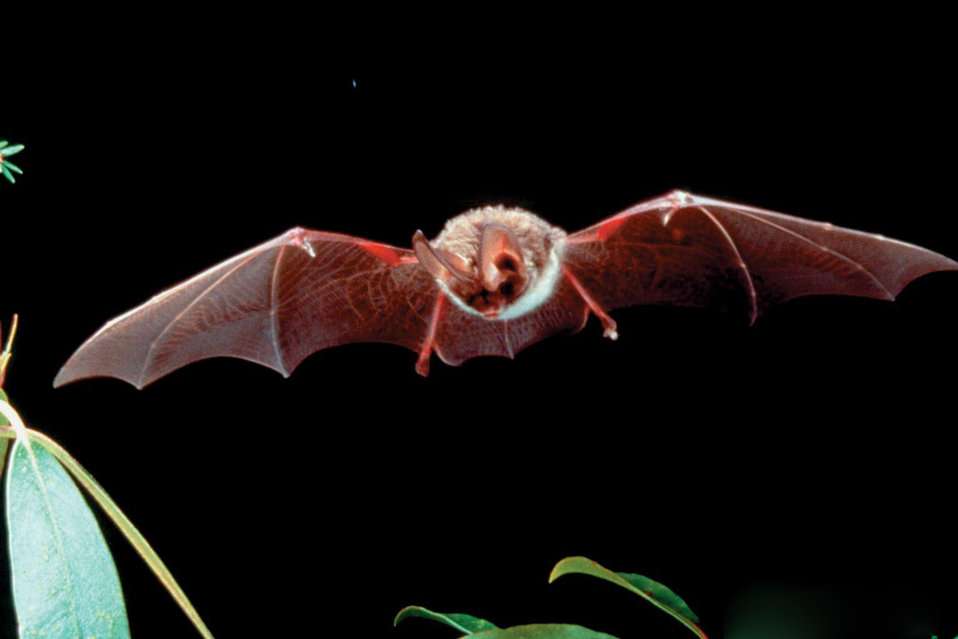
Adult Rafinesque's big-eared bat soars through the night. Bats are one of nature’s many pollinators for flowers and crops and are crucial in production for fruits and vegetables.